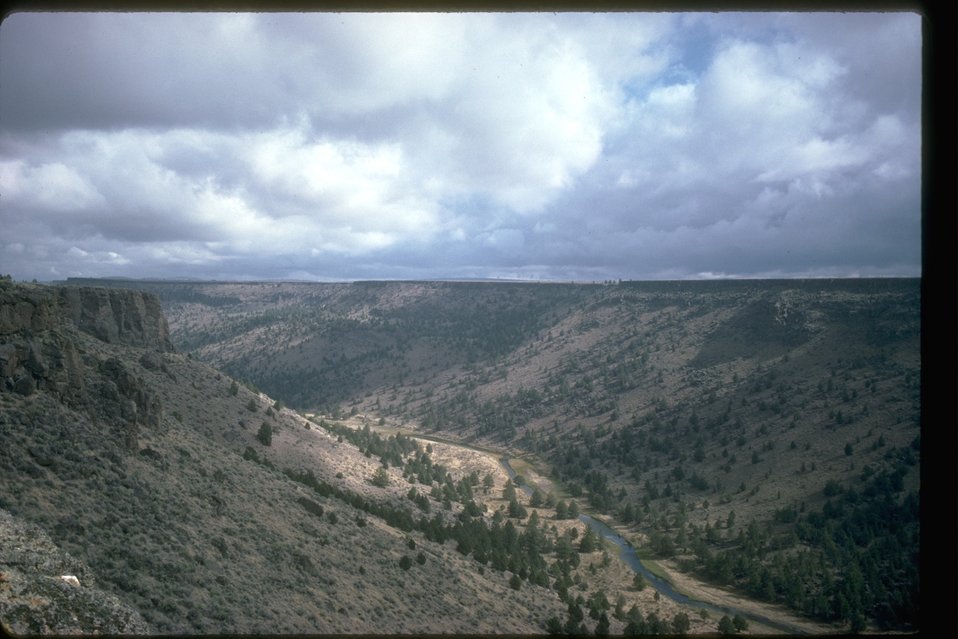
South Fork Wilderness Study Area.